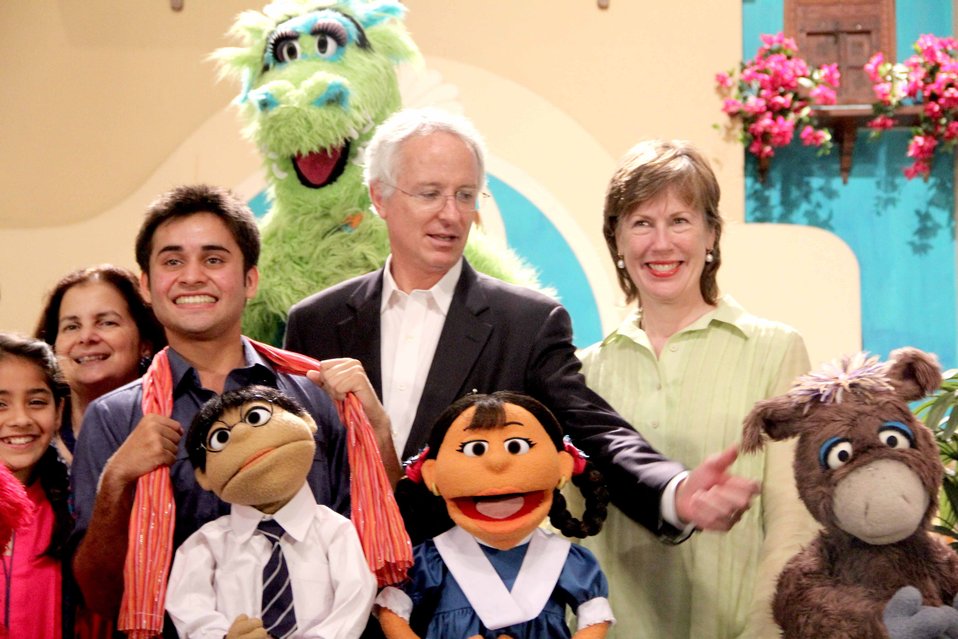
U.S. Ambassador’s Visit to Sim Sim Hamara Highlights U.S. Commitment to Improved Children’s Education in Pakistan at Lahore on 28 April, 2012

Cameron Munter and his wife group photo with the artist of the sim sim hamara